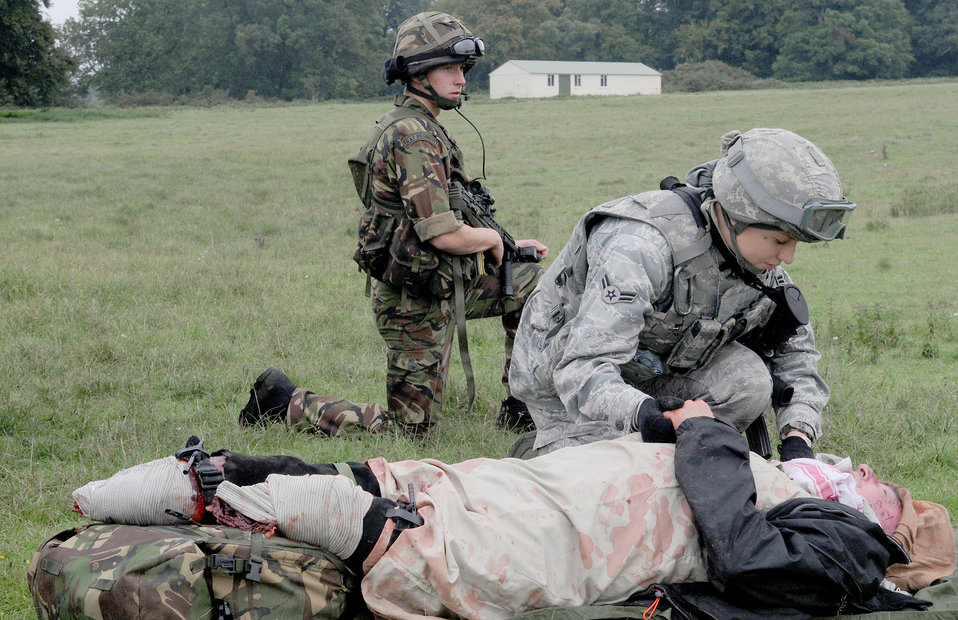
Security forces Airmen help prep RAF Regiment for Afghanistan tour

Airman 1st Class Ali Rickman (right) comforts a